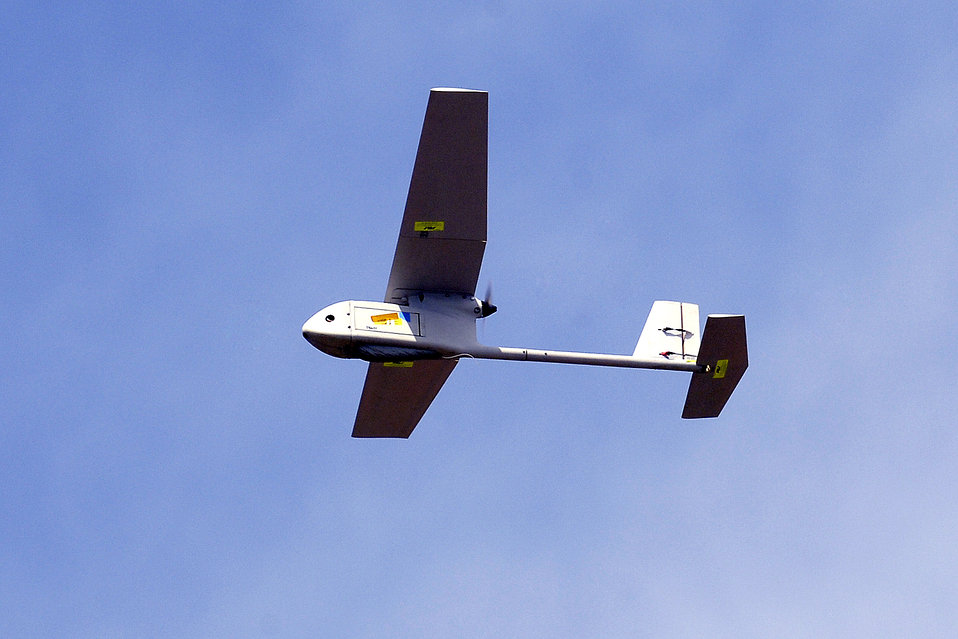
ROVER adds extra set of eyes to sky

An unmanned aerial vehicle with a camera mounted on board was the focus of a Remote Operated Video Enhanced Receiver demonstration July 28 at the U.S. Air Force Academy. The ROVER is basically a laptop with antennas that receives video captured by a UAV that shows real-time, nearby dangers allowing ground troops to make quick decisions regarding air strikes.